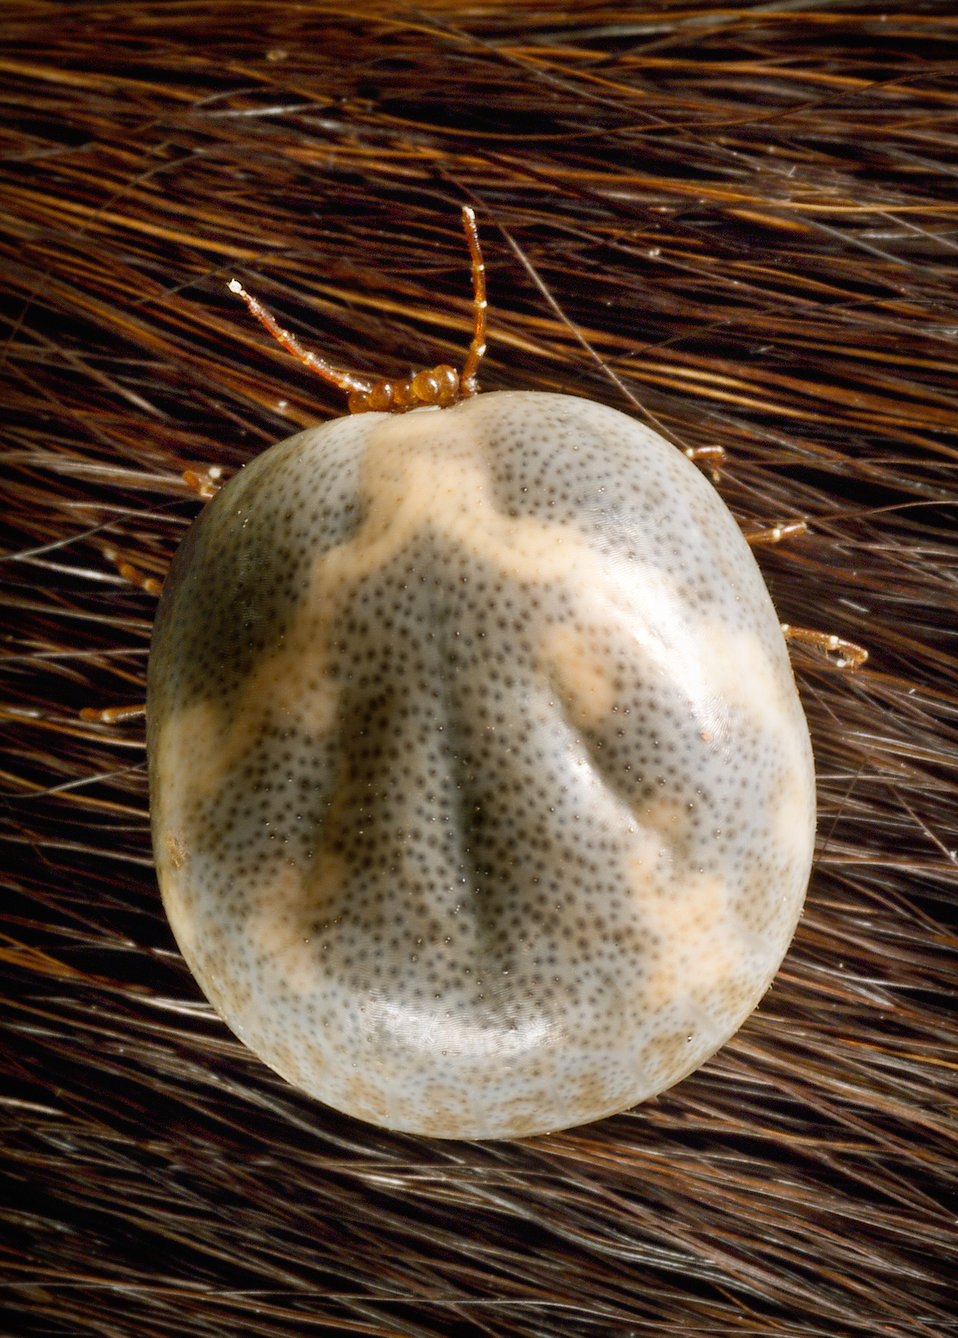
This photograph depicts a dorsal view of an engorged female "lone star tick", Amblyomma americanum. Note a number of round, amber-colored eggs showing from beneath the head region, which were just laid by this female. An engorged female of this species can lay approximately 2000-2500 eggs. To view additional images related to this tick specie, see PHIL 4407, 8676, 8677, and 8679 through 8685.